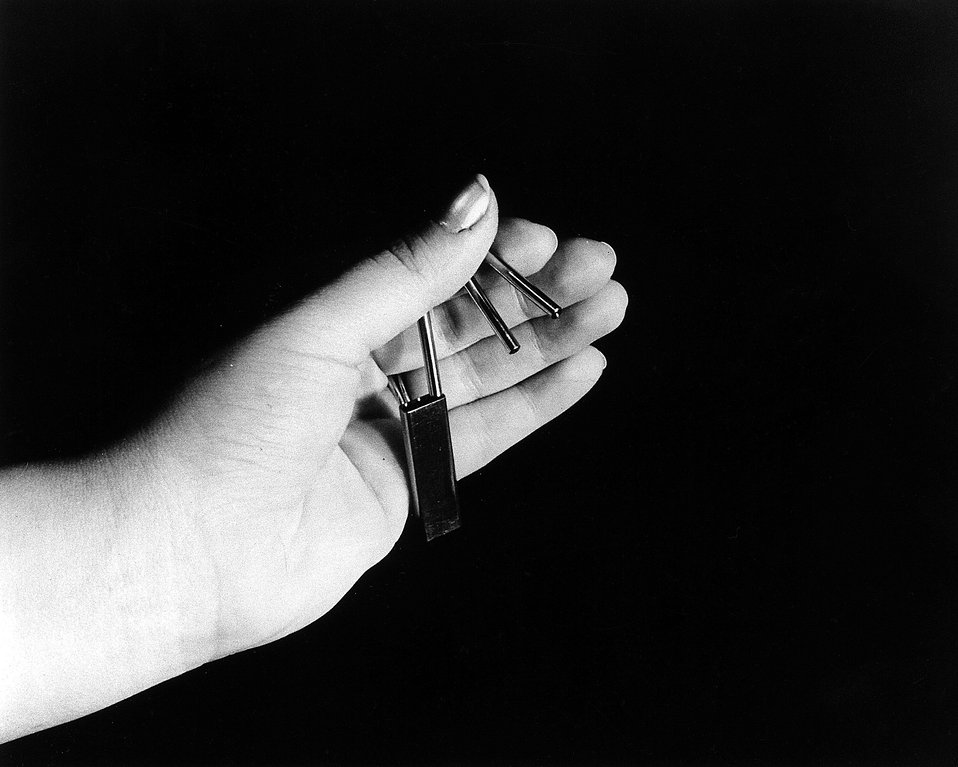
A plutonium-238 fueled thermoelectric generator, coupled with conventional pacemaker electronic circuits, is being developed for the AEC by the Nuclear Materials and Equipment Corp. (NUMEC), Apollo, Pennsylvania. Circa 1968.